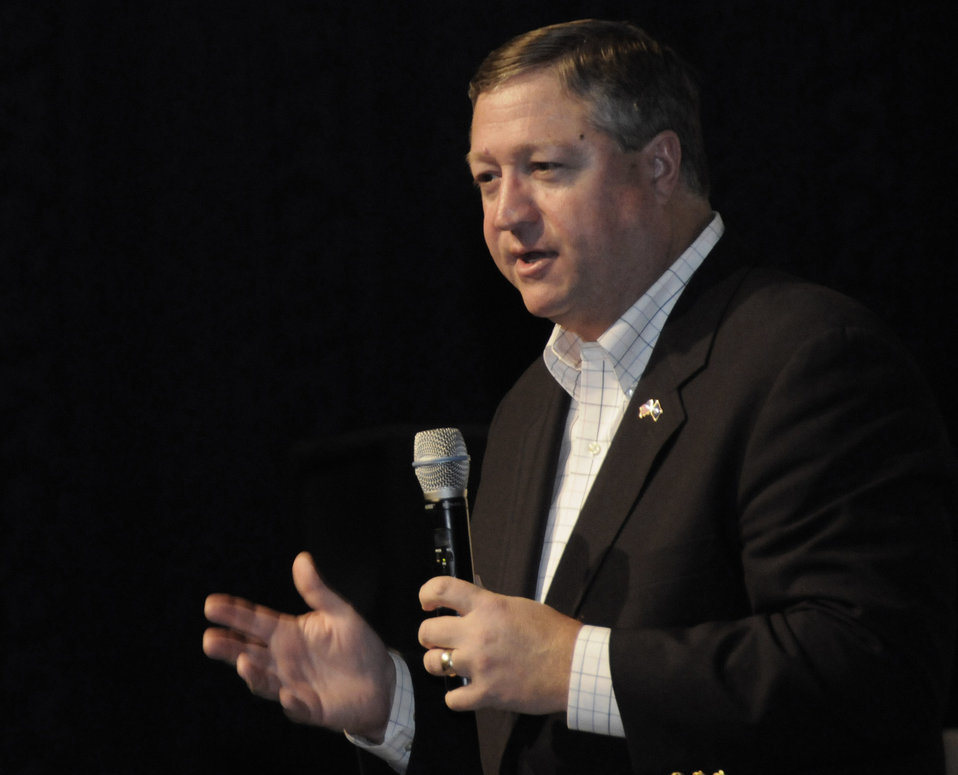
Secretary conducts Airmen's call

Secretary of the Air Force Michael Donley addresses an Airmen's call audience Oct. 11 during his visit to the 379th Air Expeditionary Wing in Southwest Asia. The secretary described his vision ahead for the Air Force, the challenges faced and the plan to move the Air Force into the future.